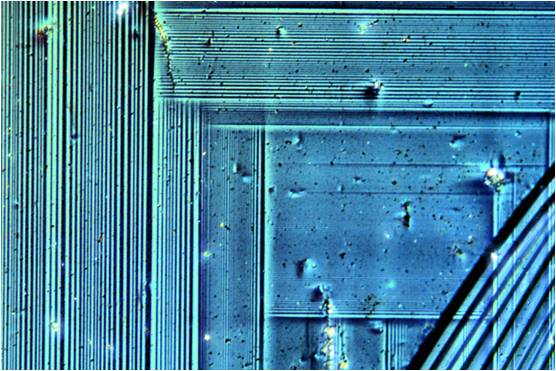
At Ames Laboratory, structural domains in a calcium-iron-arsenic compound, one of the parent materials of iron arsenide superconductors.

Ames Lab physicists discover that the domains in iron arsenides form into stripe-like patterns when exposed to low temperatures.